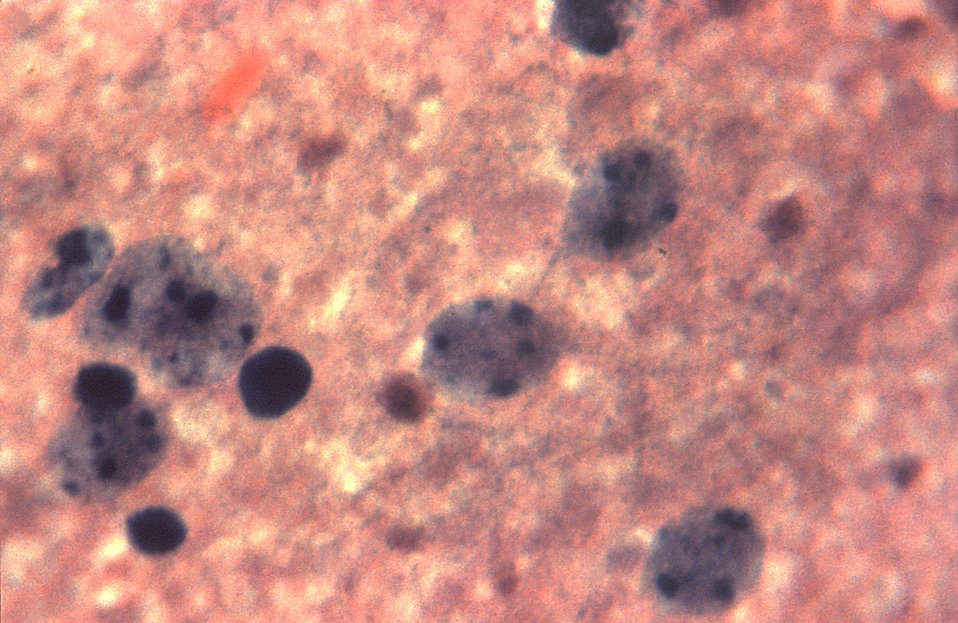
This dog brain impression slide depicts the cellular changes due to rabies encephalitis including intracellular Negri bodies.